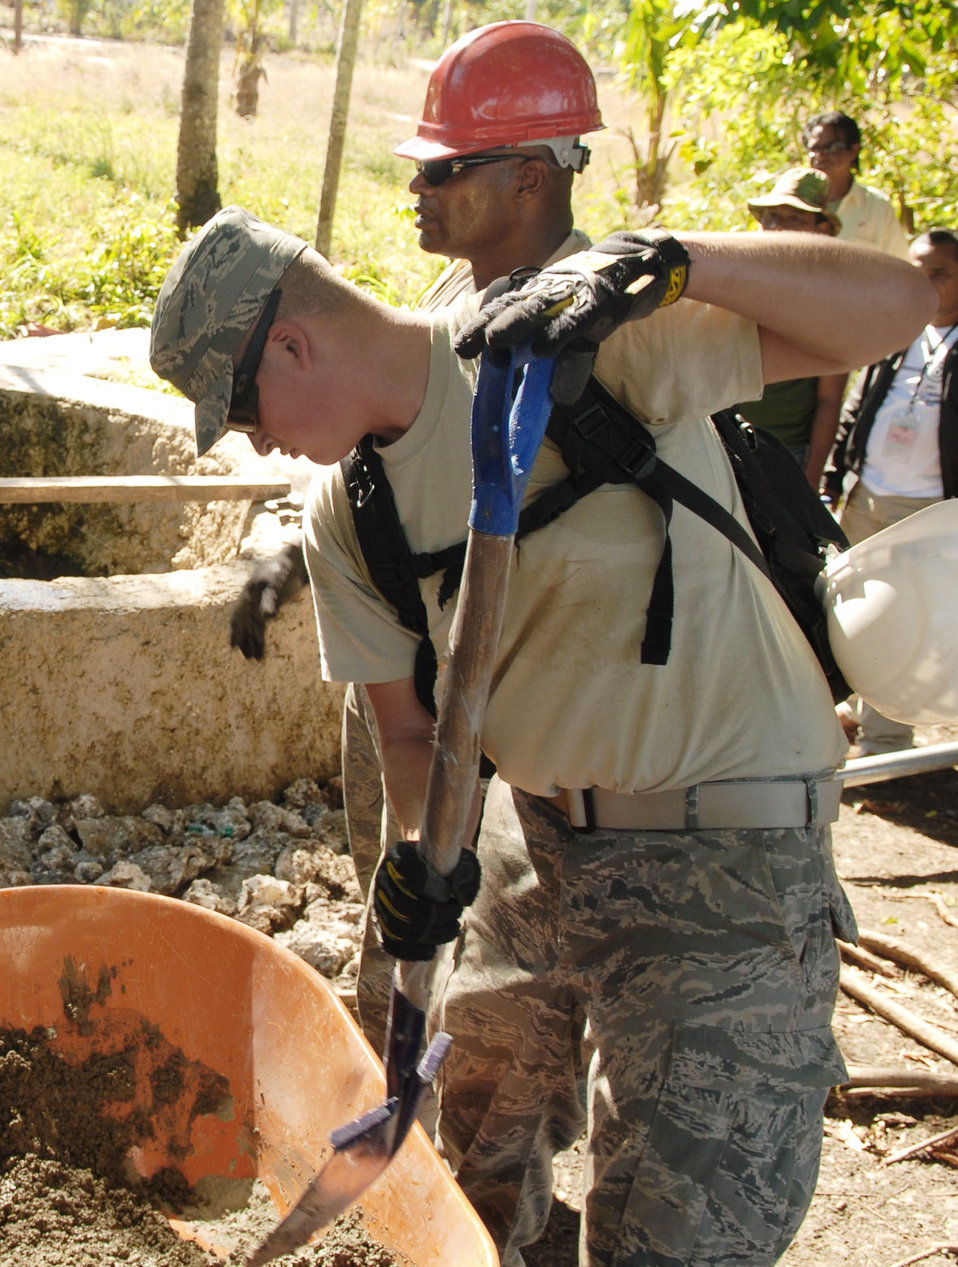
Indonesian, U.S. team keeps water flowing for village

Air Force civil engineers deployed to Naioni, Indonesia, as part of Operation Pacific Angel 2009 mix concrete to form a base for a water distribution pump for a rural village July 17. The Airmen worked with Indonesian military members and civilians to install one water pump and more than 900 feet of water distribution lines connecting to a water storage tank. Pacific Angel is a Pacific Air Forces humanitarian and civic assistance operation led by 13th Air Force at Hickam Air Force Base, Hawaii.